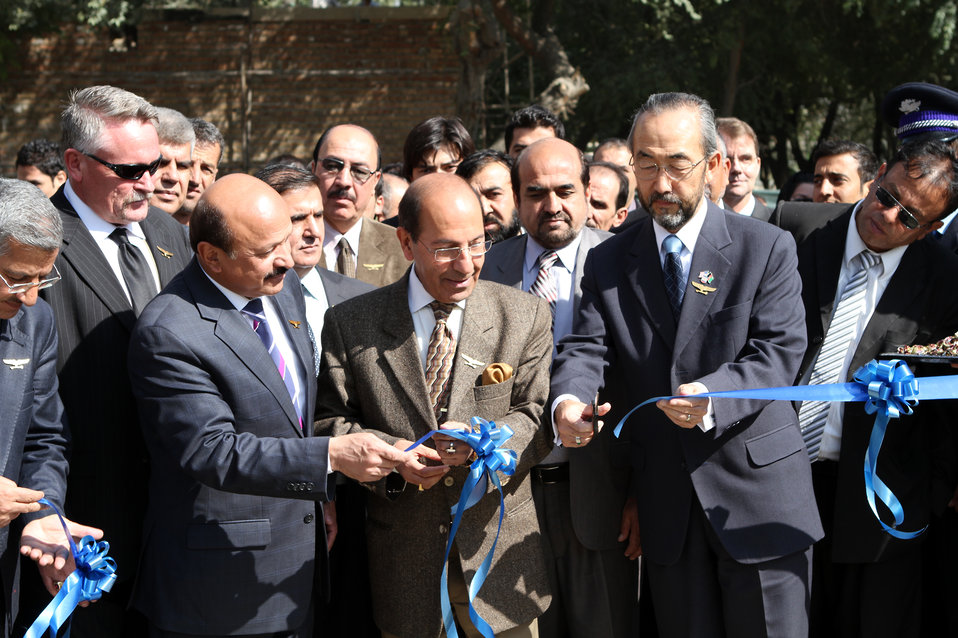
Inauguration of citizen information center